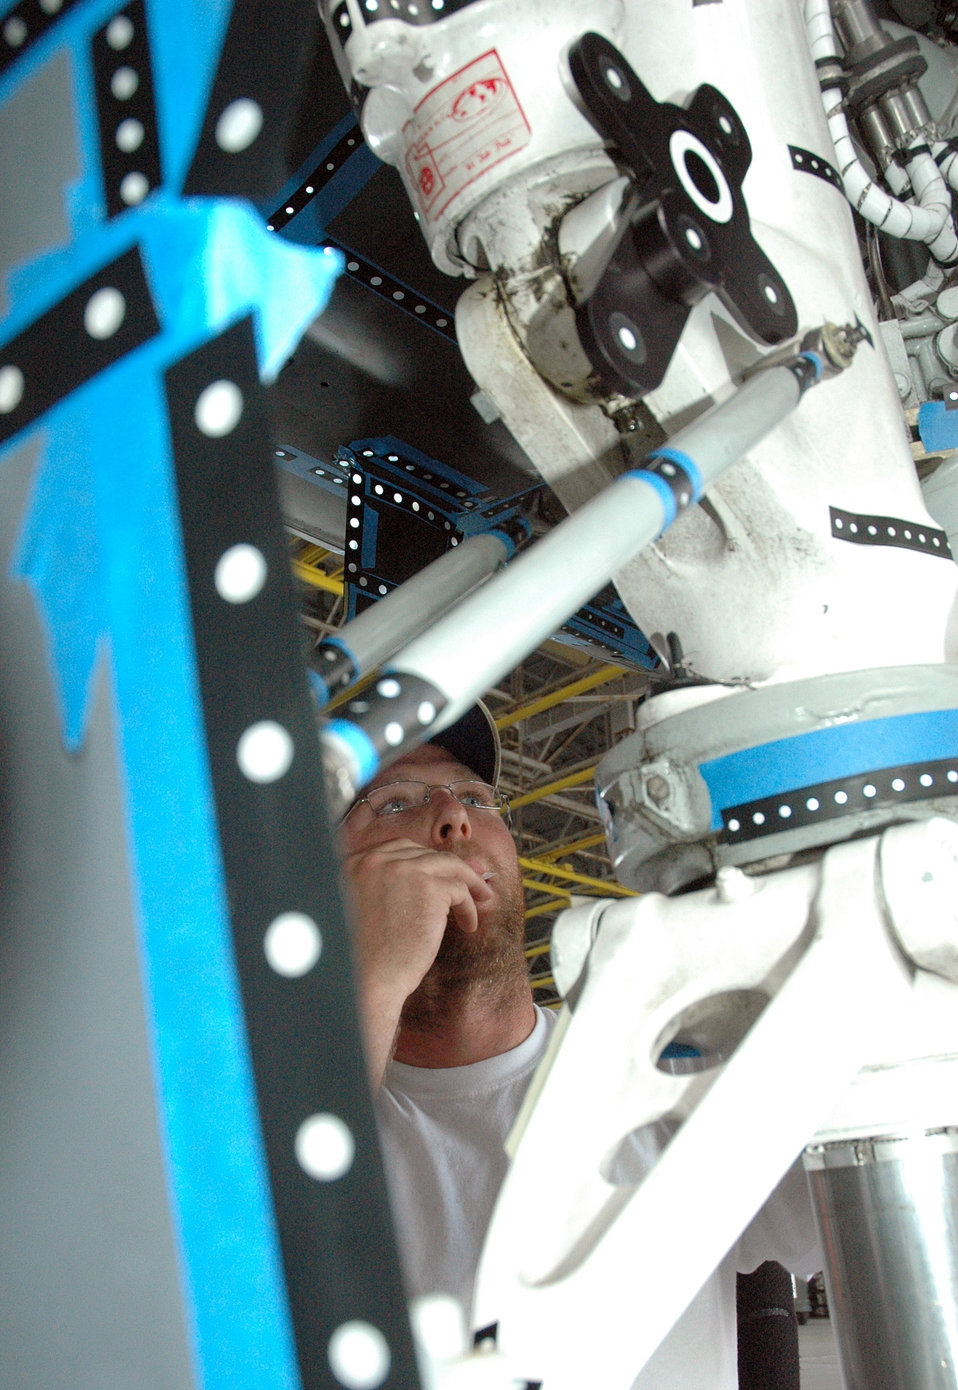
computerized diagnostic measurement

David Senter places reflective dots on the A-10C Thunderbolt II frame, which will later be photographed using a handheld camera. Next, using Virtual Surveillance Target Attack Radar System technology, a 3-D image of the aircraft will be generated. This will help engineers outfit the A-10 for smart weapons. Mr. Senter is a 46th Seek Eagle equipment specialist.